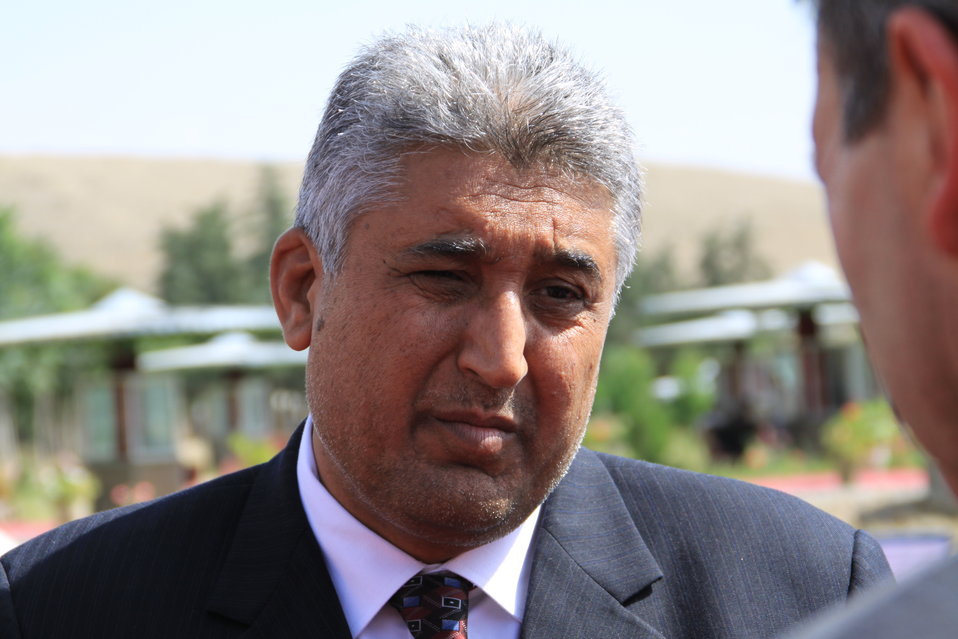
Badam Bagh Farm